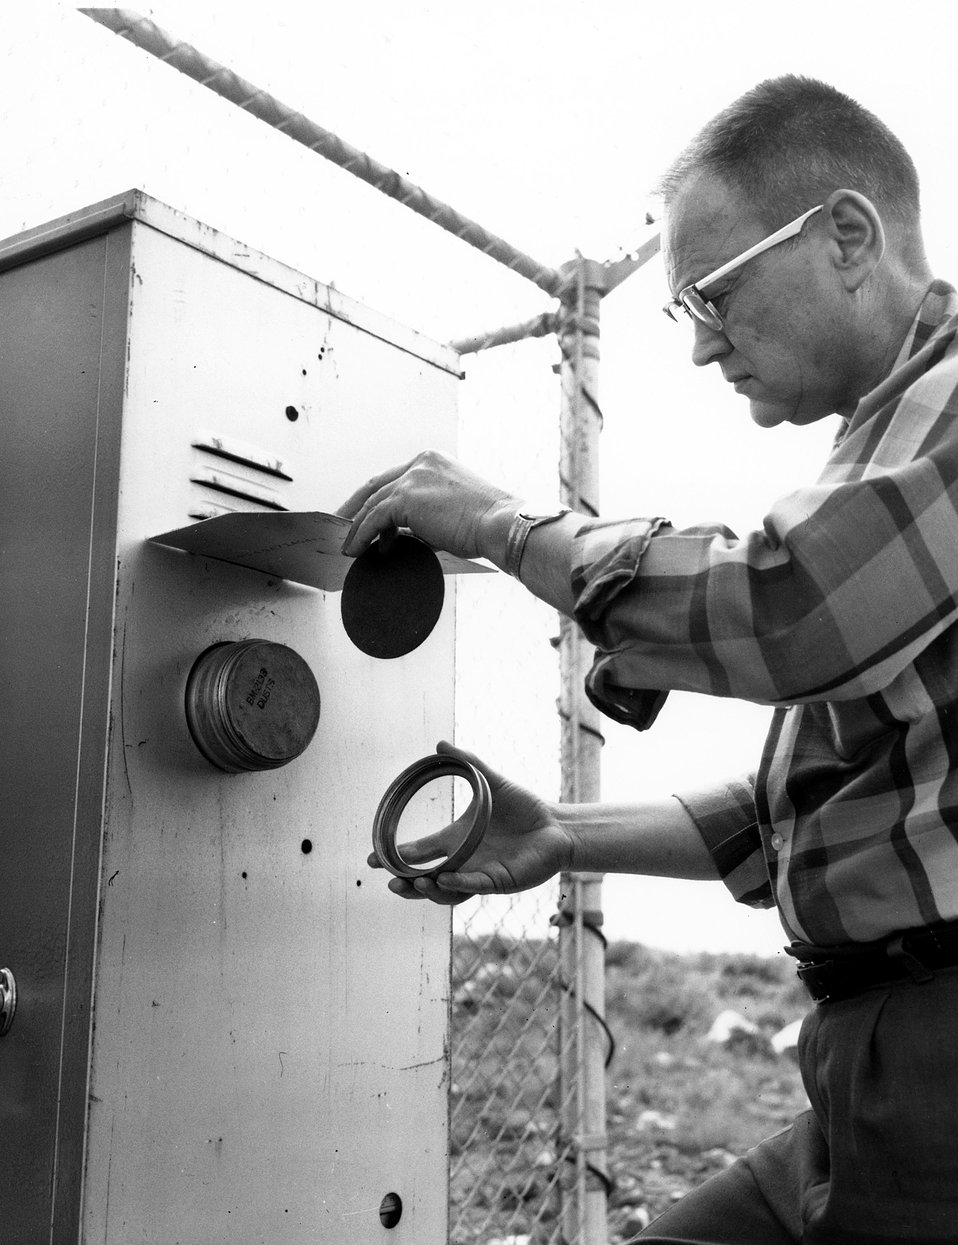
Worker changing the filter of a high-volume outdoor air monitor .